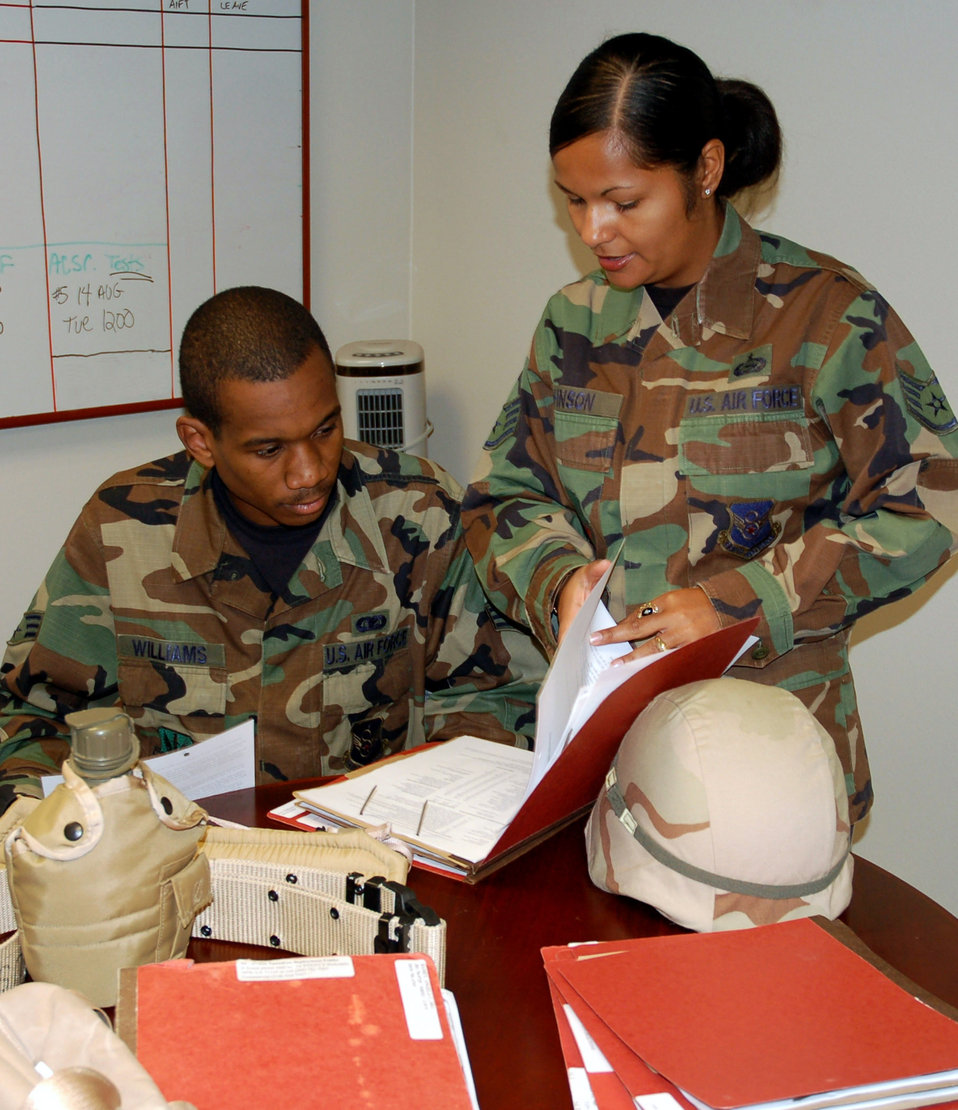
Readiness sergeant puts training to good use

Staff Sgt. Brenda Johnson explains deployment requirements to Senior Airman Christopher Williams.Sergeant Johnson put her self aid and buddy care skills to work recently during a temporary duty by helping victims of a car accident. She is a unit deployment manager for Eighth Air Force.